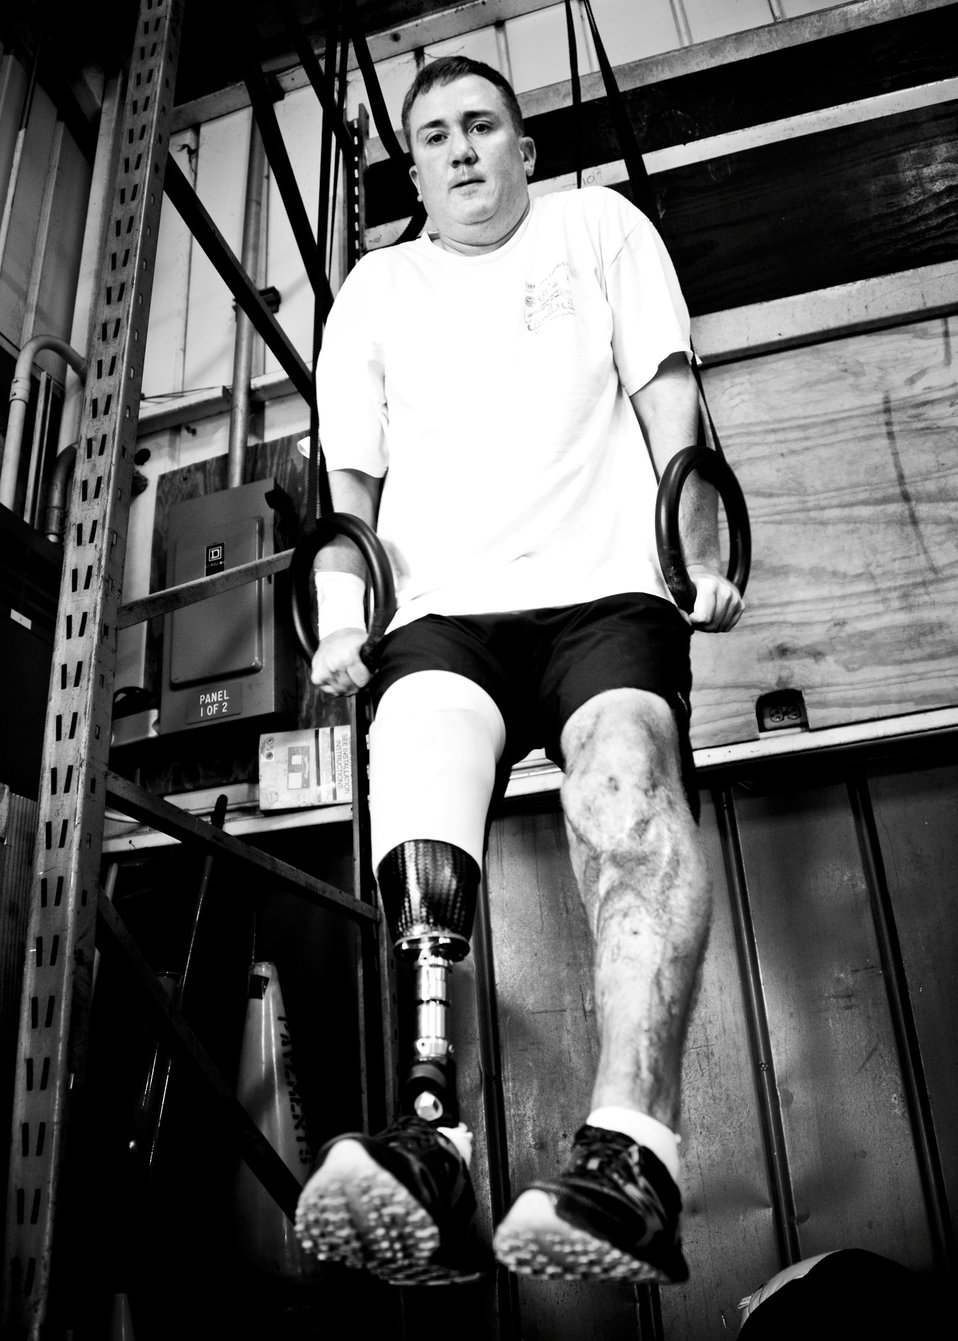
SSgt David Flowers

Staff Sgt. David Flowers holds himself up with the parallel rings during a workout June 28, 2011, at Eglin Air Force Base, Fla. The explosive ordnance technician was officially returned to duty in June after he lost his right leg and incurred major damage to his left leg in a land mine explosion in Afghanistan in 2009. In August, he is scheduled to begin training to be an EOD instructor at the Navy EOD School. Flowers is assigned to 366th Training Squadron, Det. 3.